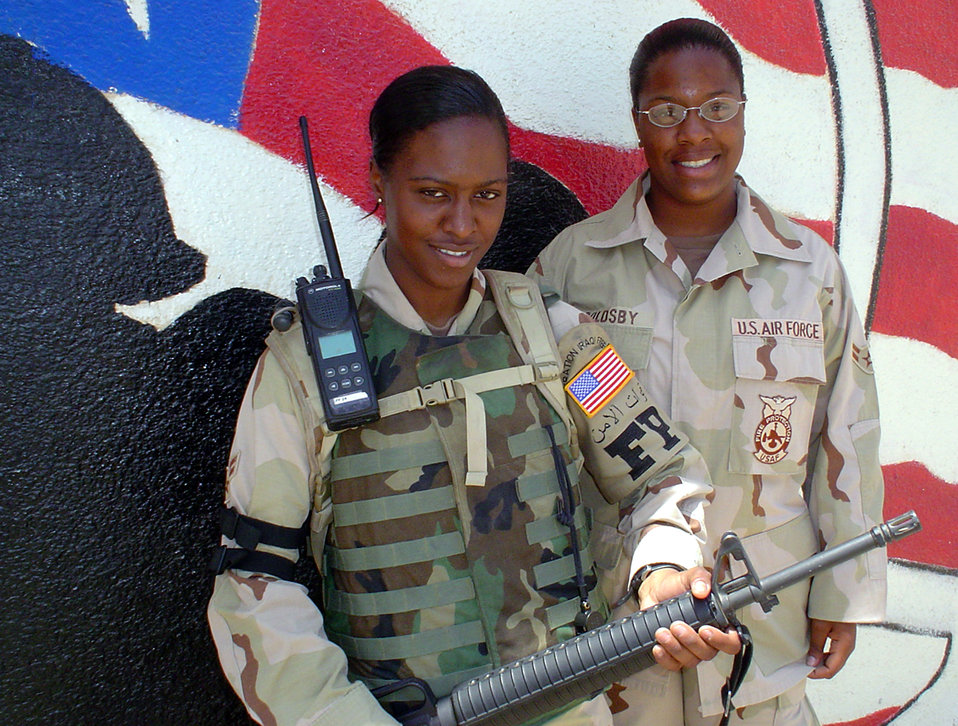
Two of four quads experiencing life in Iraq

TALLIL AIR BASE, Iraq -- Airmen 1st Class Shawn Brown (left) and Lattrice Goldsby are sisters and deployed here from Kadena Air Base, Japan. Except for technical schools, the sisters have been together throughout their military careers. They are two of a set of quadruplets.